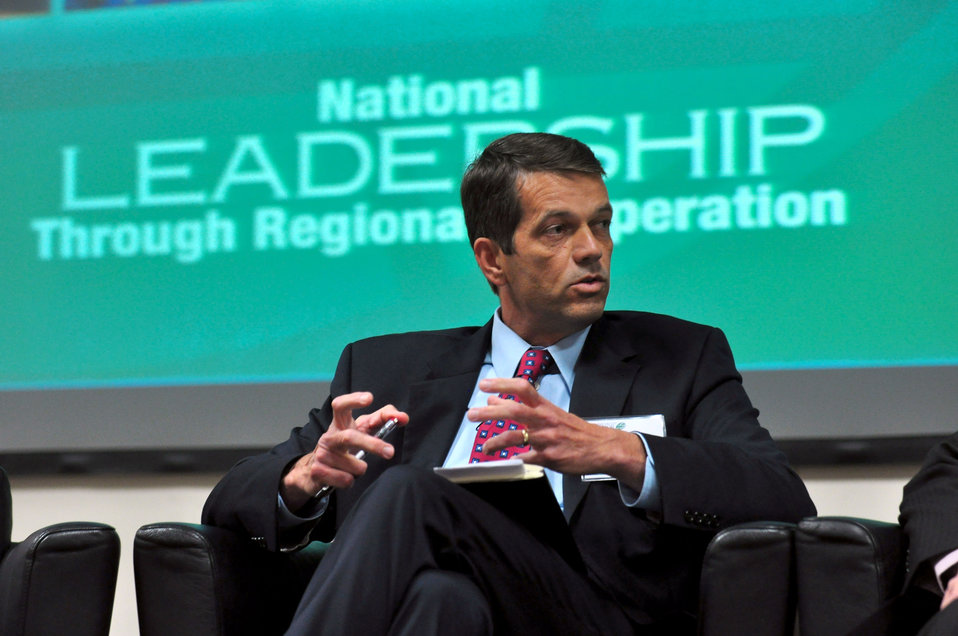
Mark Whitney Manager EM ORO Tennessee Valley Corridor Summit Oak Ridge

13-062 DOE photo Lynn Freeny 5-29-2013 Oak Ridge Tennessee